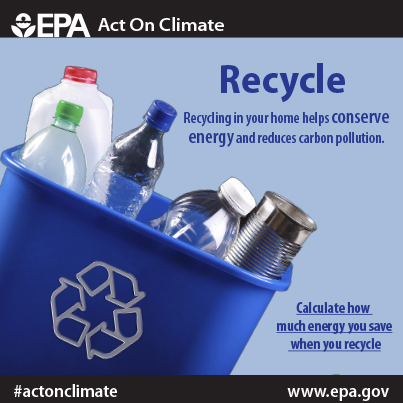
Recycle to help conserve energy, reduce pollution and #ActOnClimate.